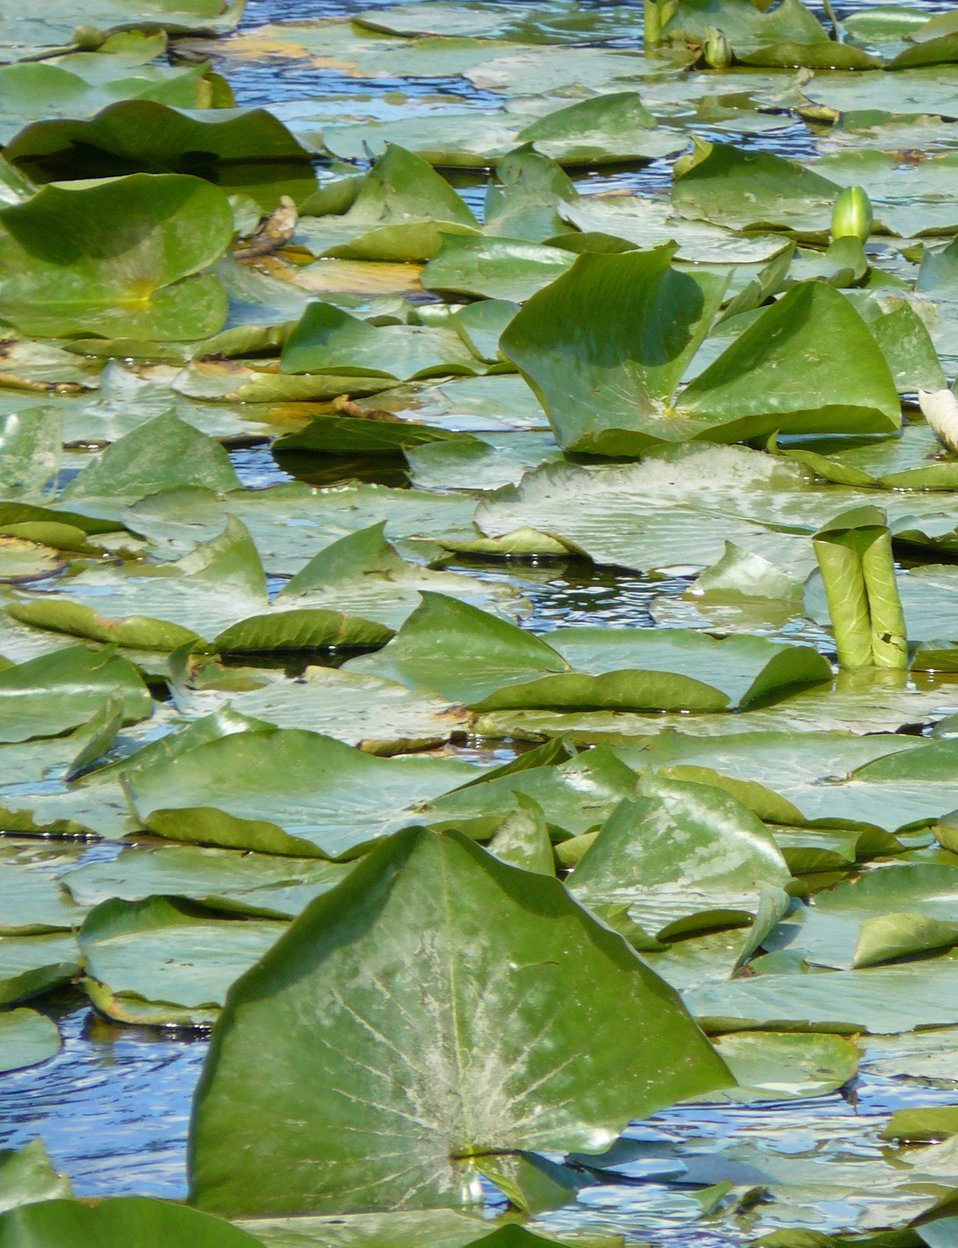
Water lilies